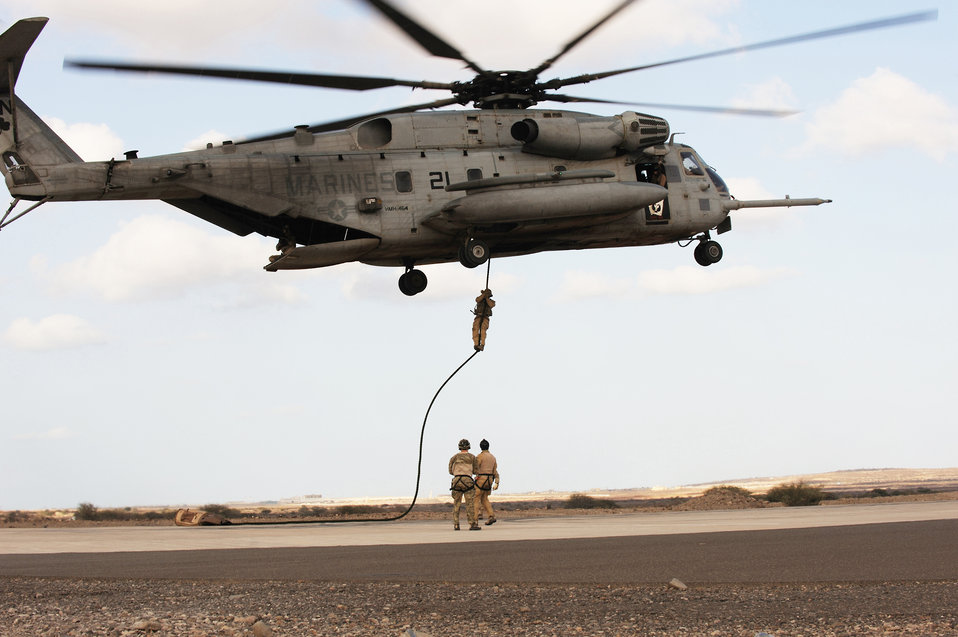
Pararescuemen hone skills in Africa

Air Force pararescuemen conduct a combat insertion and extraction exercise from a Marine CH-53 Sea Stallion helicopter in Djibouti, Africa, Jan. 5, 2010. The helicopter is attached to Heavy Marine Helicopter Squadron 464, and the two units are deployed to Combined Joint Task Force-Horn of Africa.